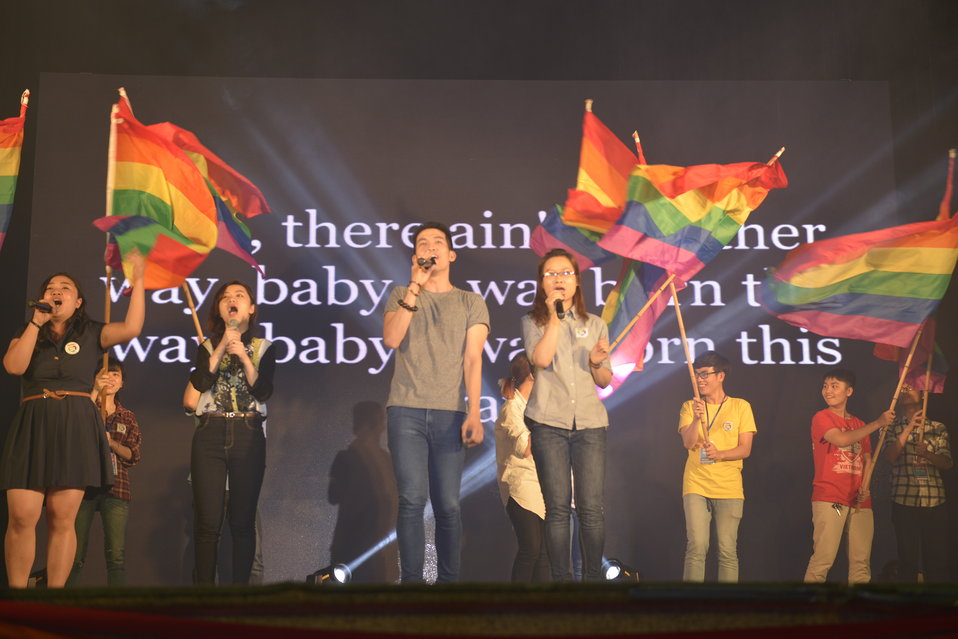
Performance at iSee LGBT Event

USAID Vietnam